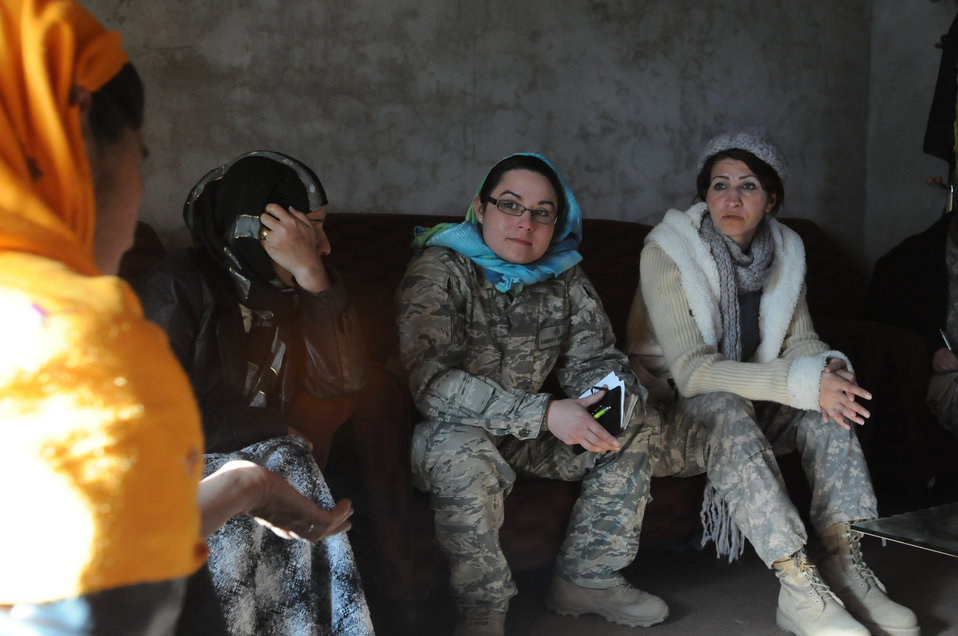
Visiting Afghan women

Two members of a Provincial Reconstruction Team at Bagram Airfield, Afghanistan, talk with Mirriam (far left), the director of women's projects in the Panjshir Valley, through an interpreter named Winna (center). The PRT members had traveled to Forward Operating Base Lion in the Panjshir Valley to meet with Afghan women there. Female servicemembers deployed to FOB Lion work hand in hand with the local Afghan women, teaching them things like first aid and how to increase their crop output.